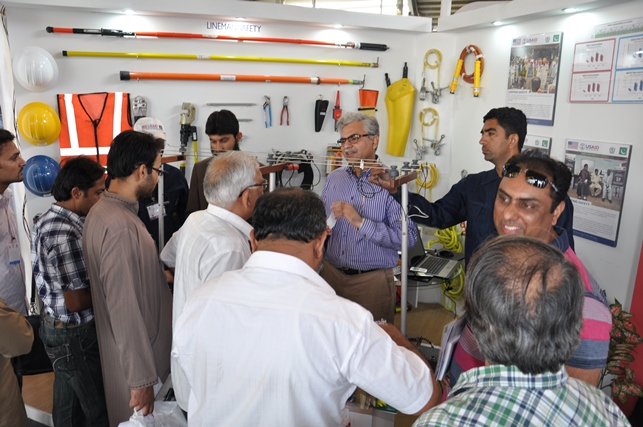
USAID participates in 11th International Pakistan Oil Gas Energy Exhibition

Visitors at the lineman safety stall